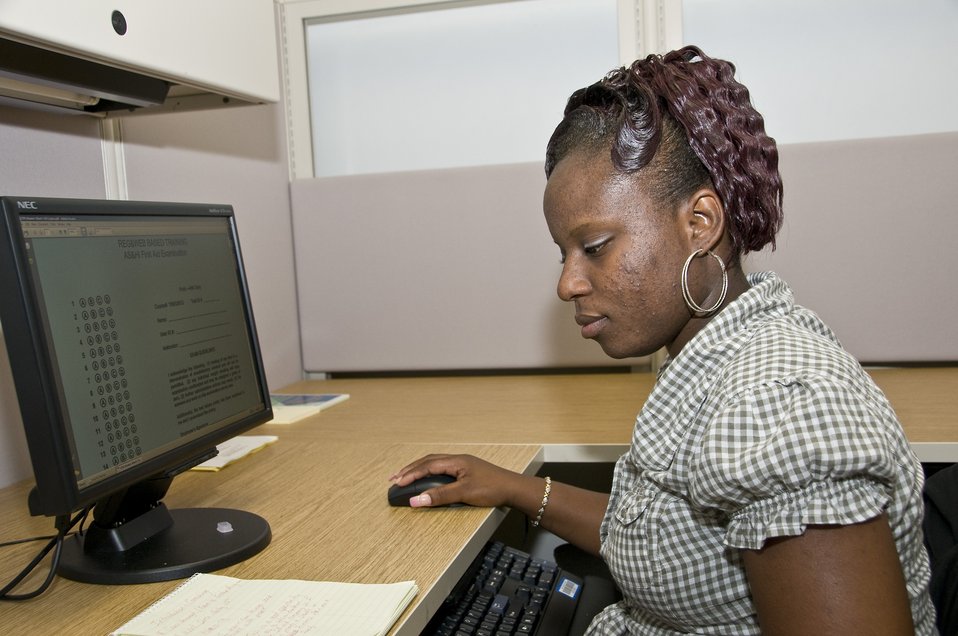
Janella Bradley